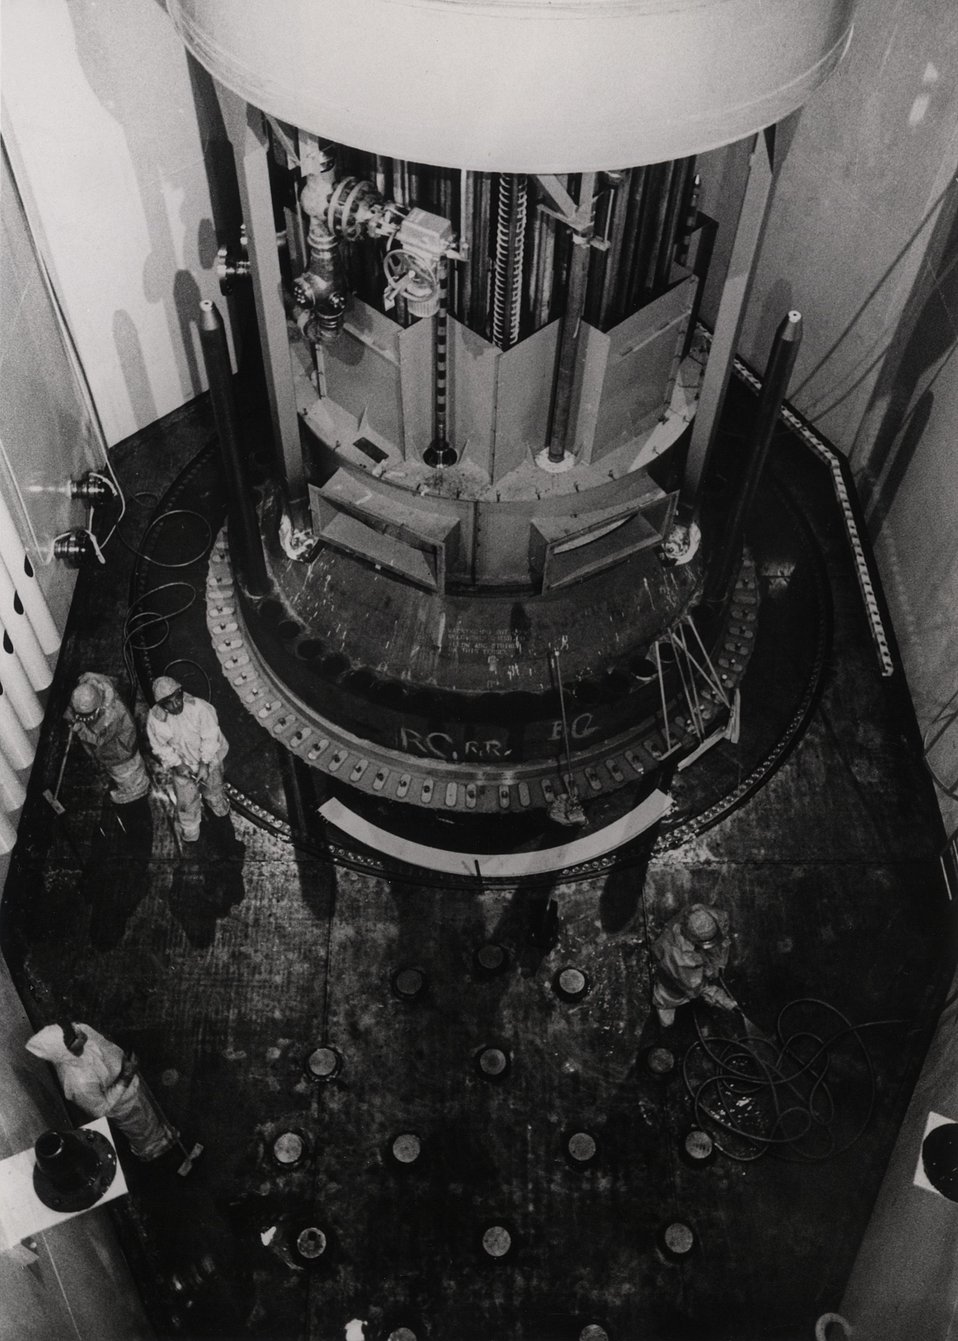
Haddam Neck-a general house-cleaning is given to the bottom of the pressurized water reactor cavity.